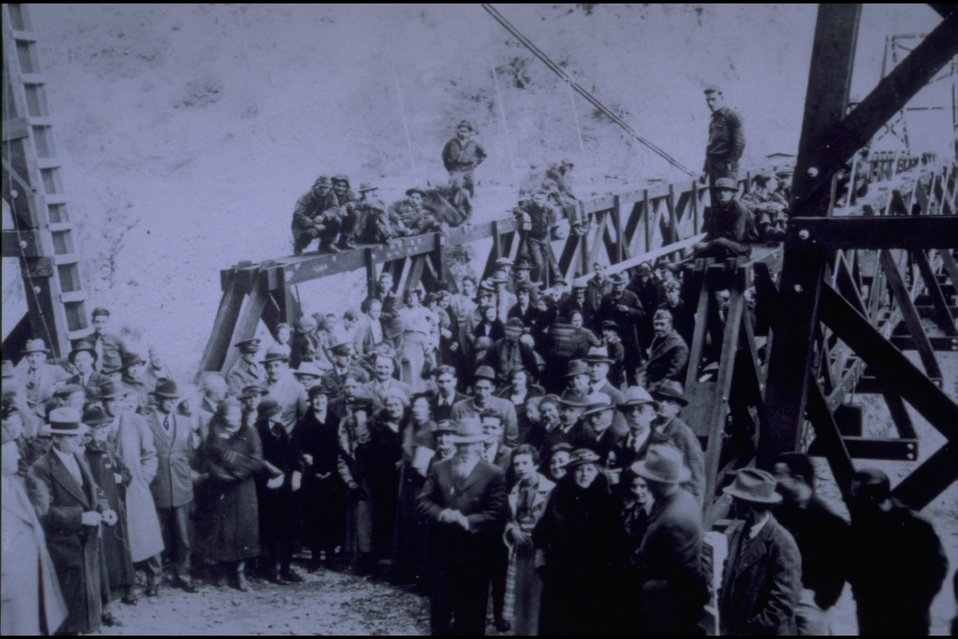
Rogue River - Grave Creek Bridge. Dedication of Grave Creek Bridge, built by CCC.